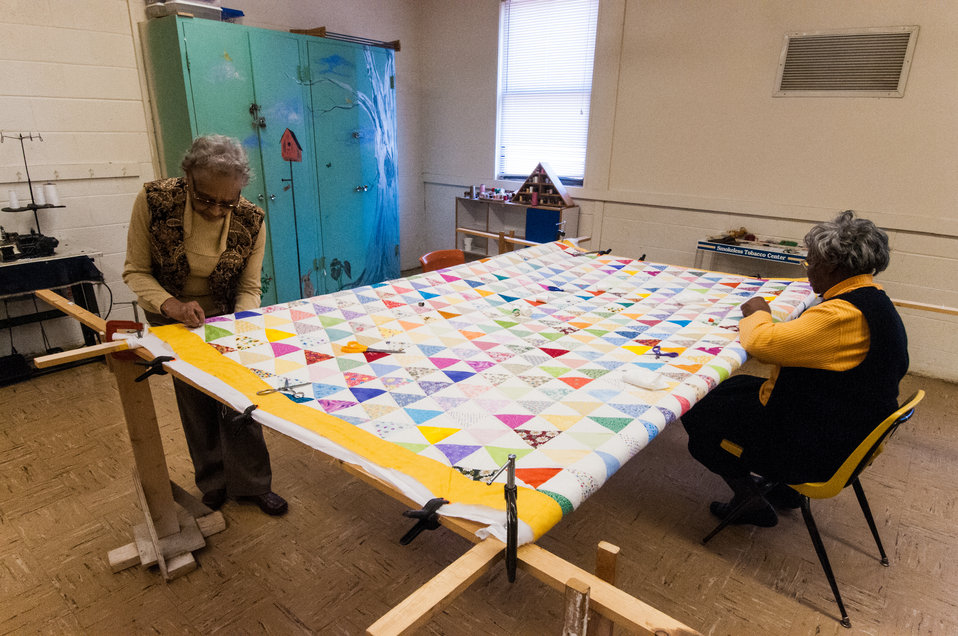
Mattie Vaughn and Mollie Hawkins work on a quilt for a King size bed at the East Baker Historical Society Community Center in Newton, Baker County, GA on Mar. 7, 2013. The East Baker Historical Society Community Center secured a U.S. Department of Agriculture (USDA) Rural Development (RD) Community Facilities (CF) Loan for the kitchen that enabled residents to prepare catered meals and to prepare and package food products. The USDA Strike Force Initiative has designated Baker County, GA as a Strike Force county selected to receive assistance to relieve persistent poverty in historically high-poverty counties.